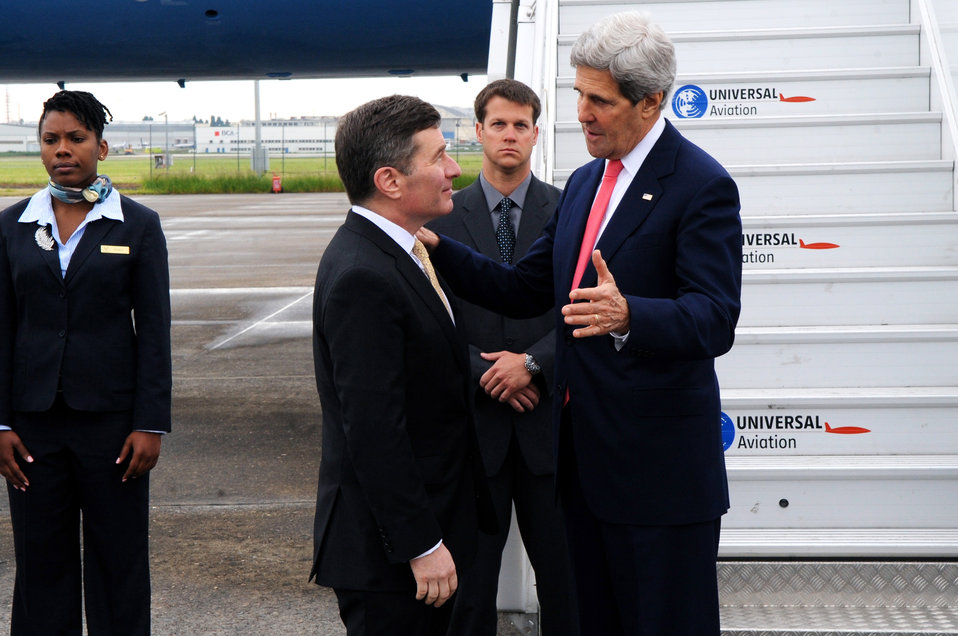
Secretary Kerry Chats With Ambassador Rivkin Before Departing Paris

U.S. Secretary of State John Kerry chats with U.S. Ambassador to France Charles Rivkin before departing from Paris, France, at the end of an eight-day trip on May 28, 2013.